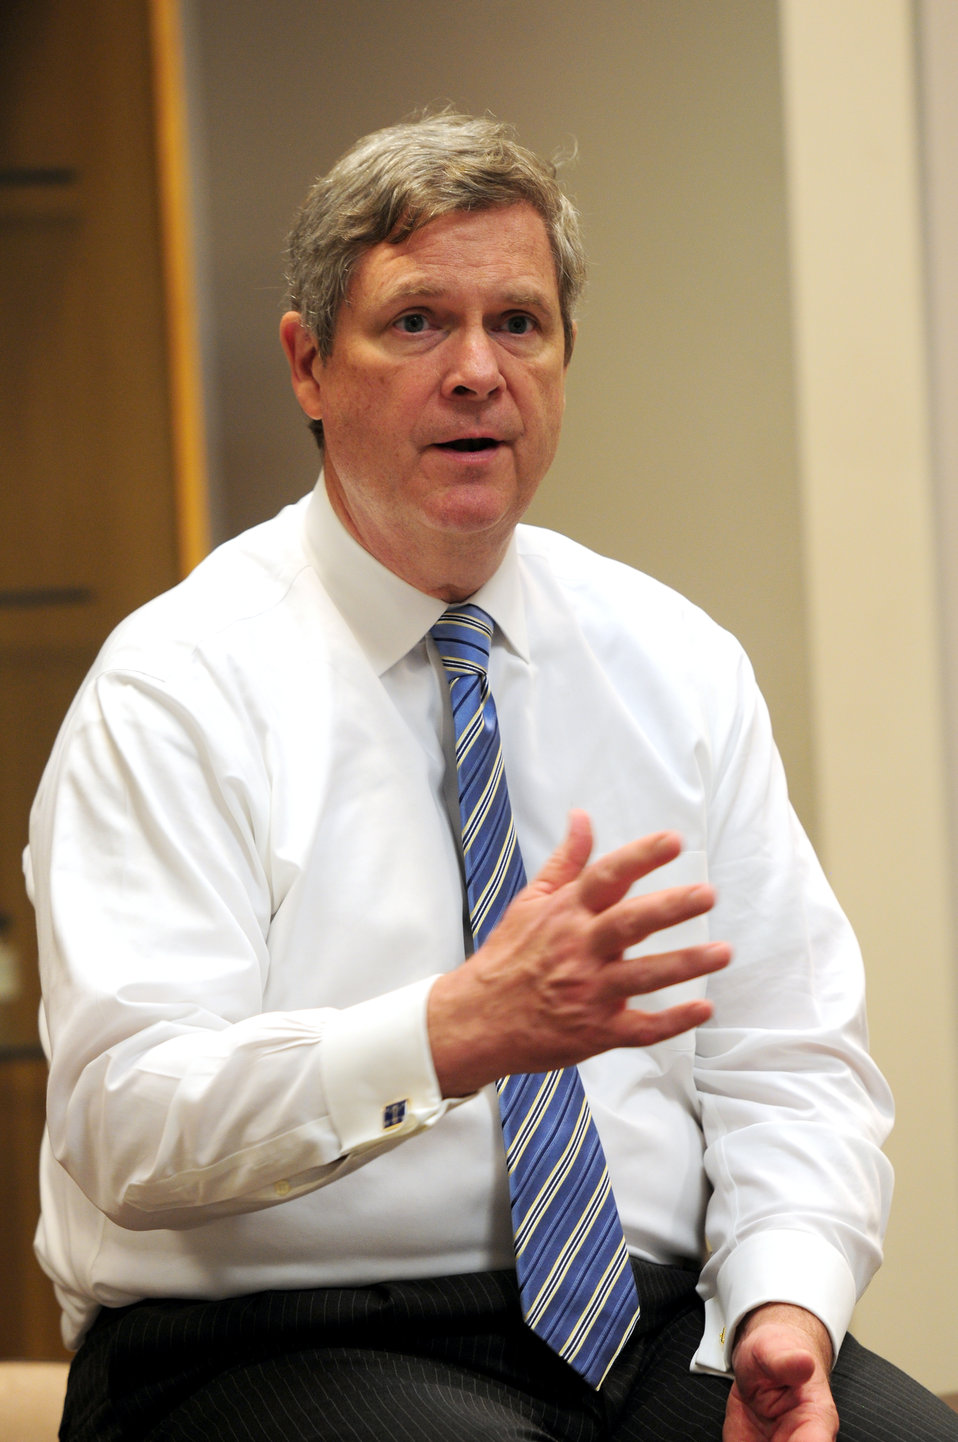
Agriculture Secretary Tom Vilsack speaks at a stakeholder meeting held at the State of Hawaii, Department of Agriculture Plant Quarantine Building in Honolulu, Hawaii, on Tuesday, January 10, 2012, to discuss USDA programs, agricultural challenges in Hawaii, and alternative energy.